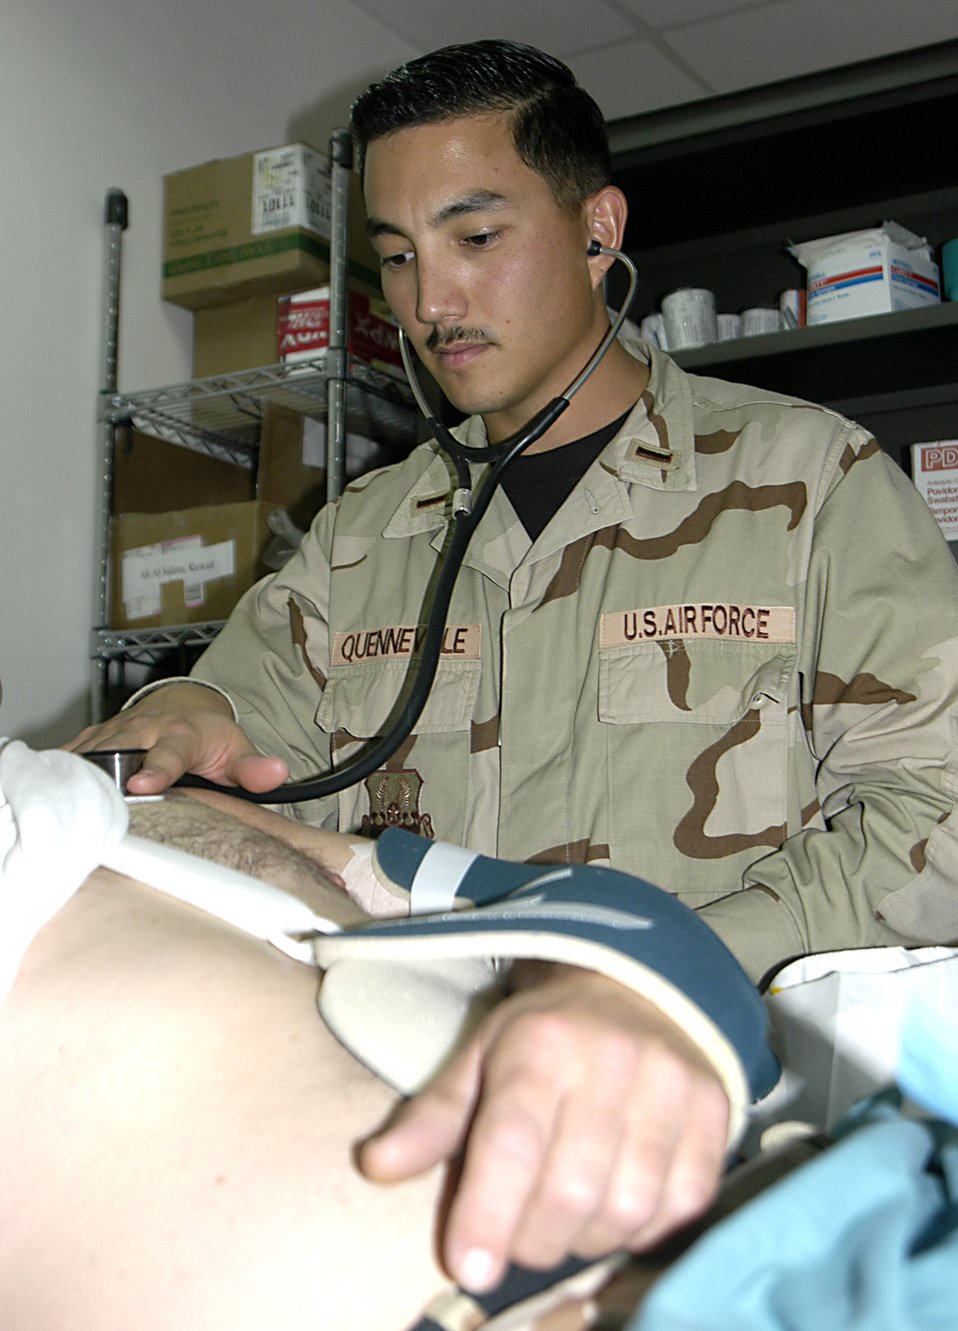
Airmen respond to bus accident

SOUTHWEST ASIA (AFPN) -- 2nd Lt. Ray Quenneville takes the vital signs of a patient involved in a bus accident. Lieutenant Quenneville is with 386th Expeditionary Medical Group.